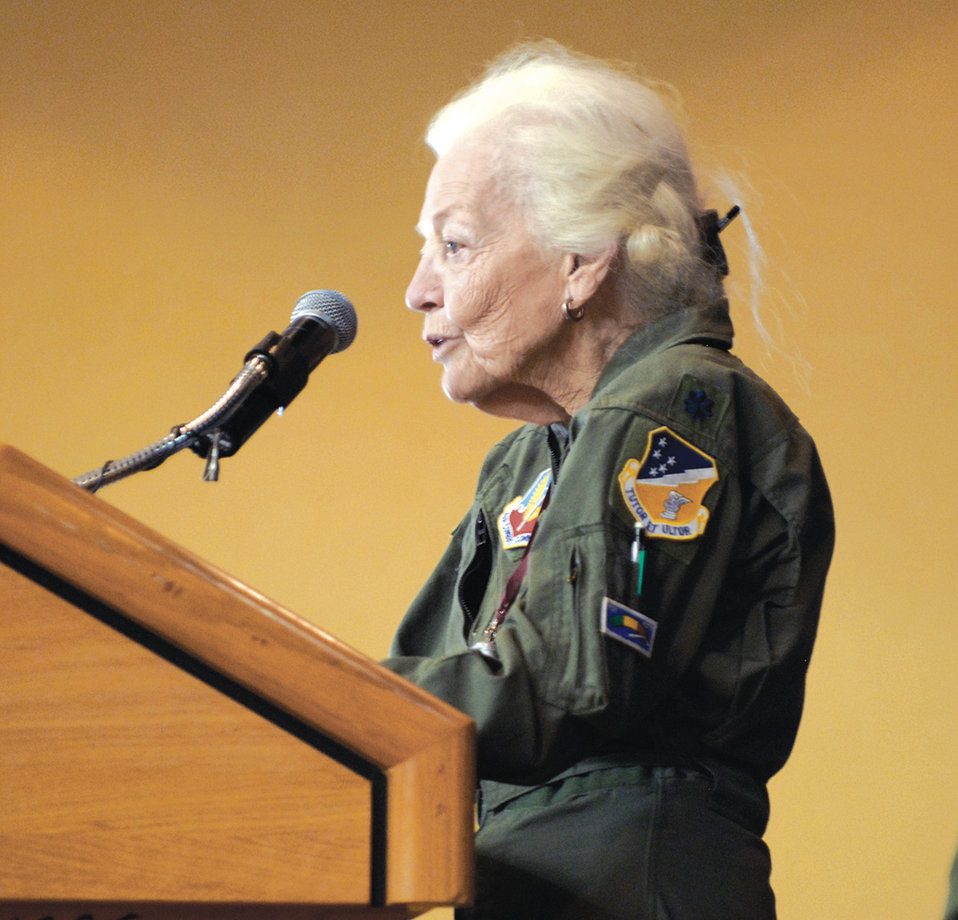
WASP celebrate Women's History Month

Betty Blake spoke to community members March 4, 2010, at Luke AFB, Ariz., during the Women's History Month Observance Luncheon. Ms. Blake is a member of the Women Airforce Service Pilots.